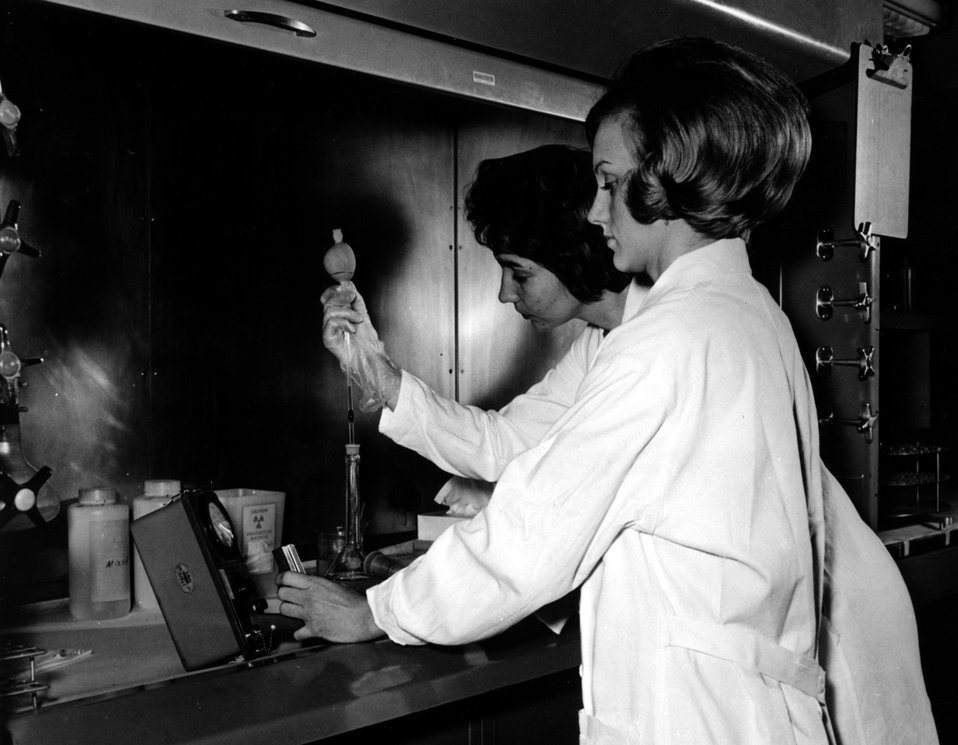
Participants in one of the nuclear medical technology courses presented regularly by the Special Training Division of Oak Ridge Associated Universities. c. 1970